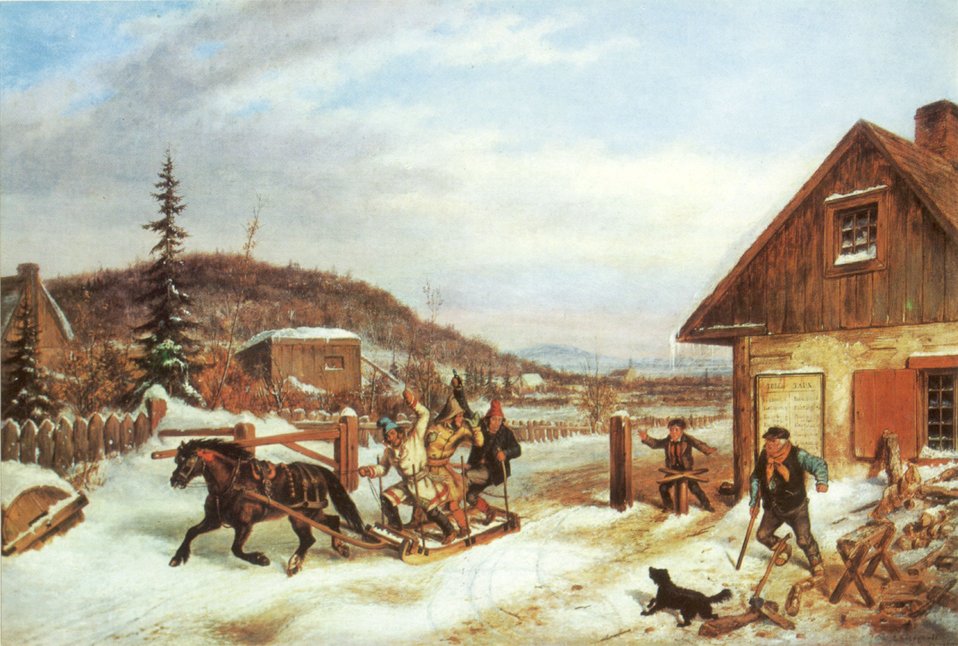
'The Toll Gate', oil on canvas painting by Cornelius Krieghoff, 1859, 17 x 24 in